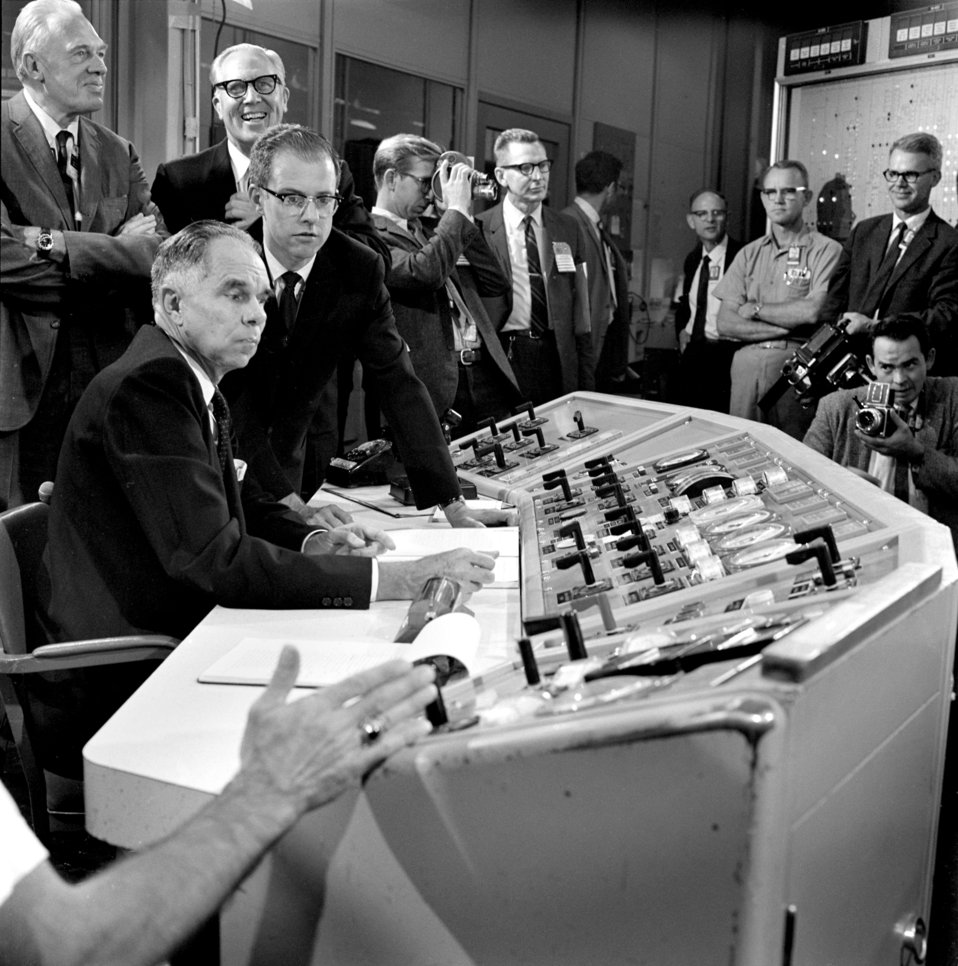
Startup of MSRE with U-233 with Atomic Energy Commission Chairman Glenn Seaborg setting at the controls 1968 Oak Ridge

68-510 DOE photo Frank Hoffman 10-10-1968 Molten Salt Reactor began operating with uranium-233 fuel Oak Ridge Tennessee